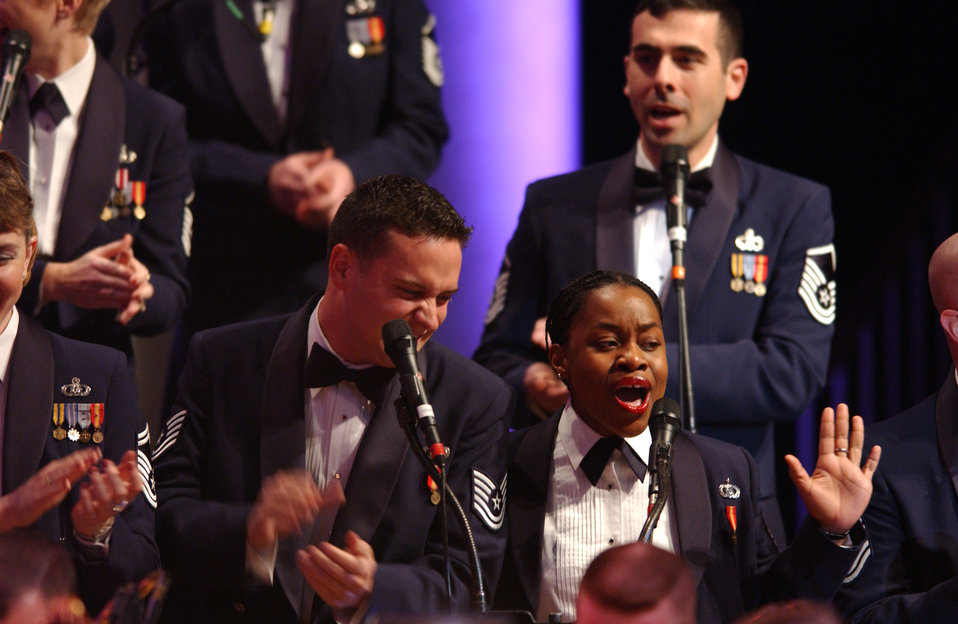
Angels, Dreams and Miracles

WASHINGTON -- Singing Sergeants perform during the Dec. 6 U.S. Air Force Band Christmas concert at Constitution Hall. This year's Air Force Band production,